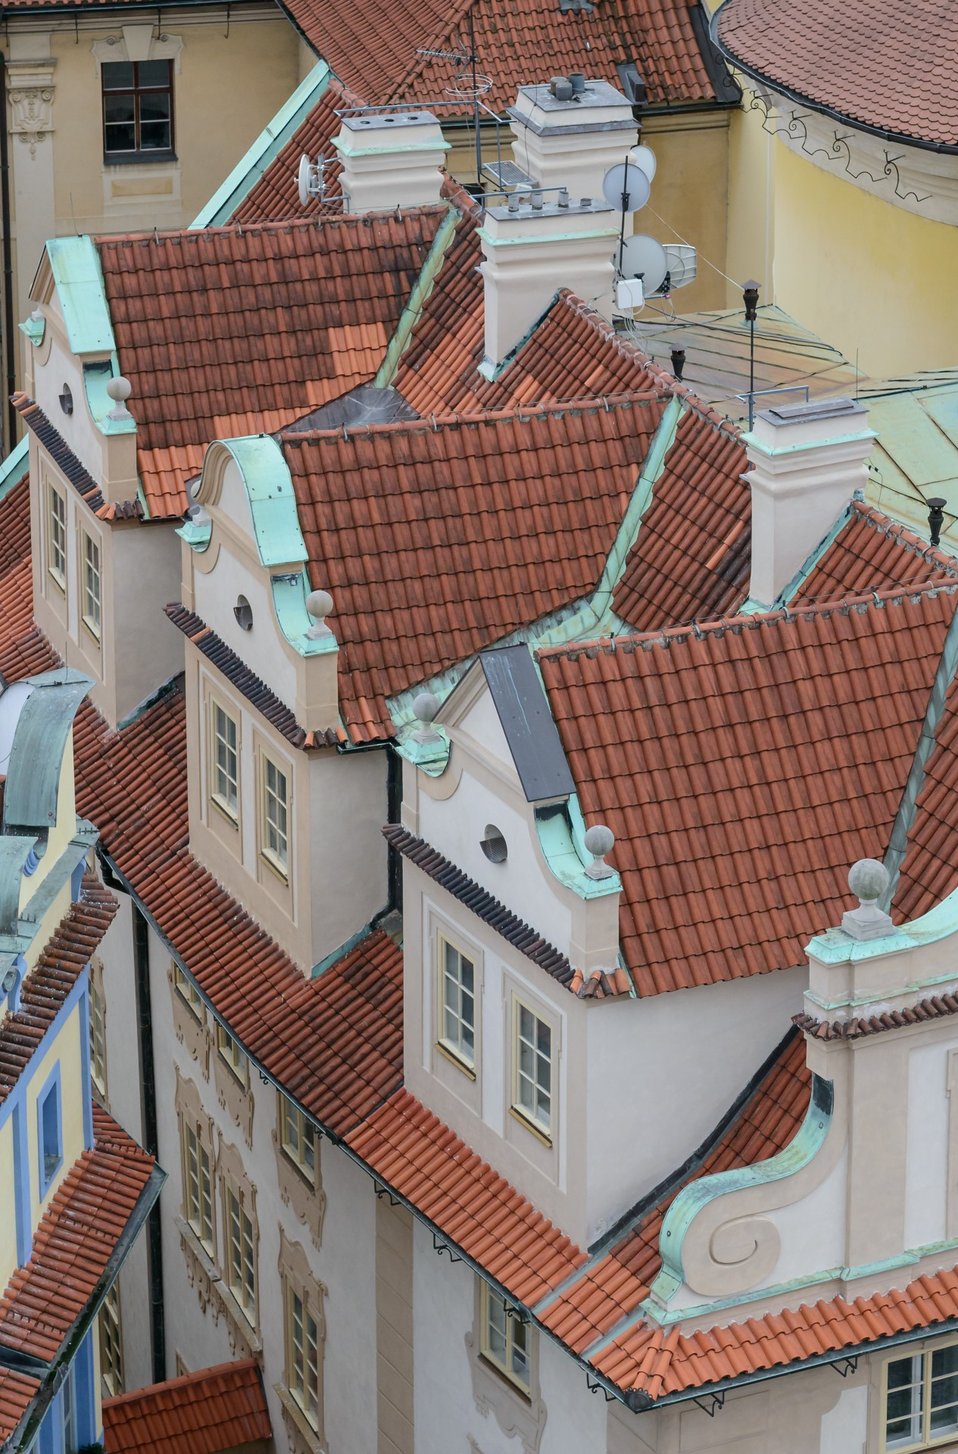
Prague roofs.